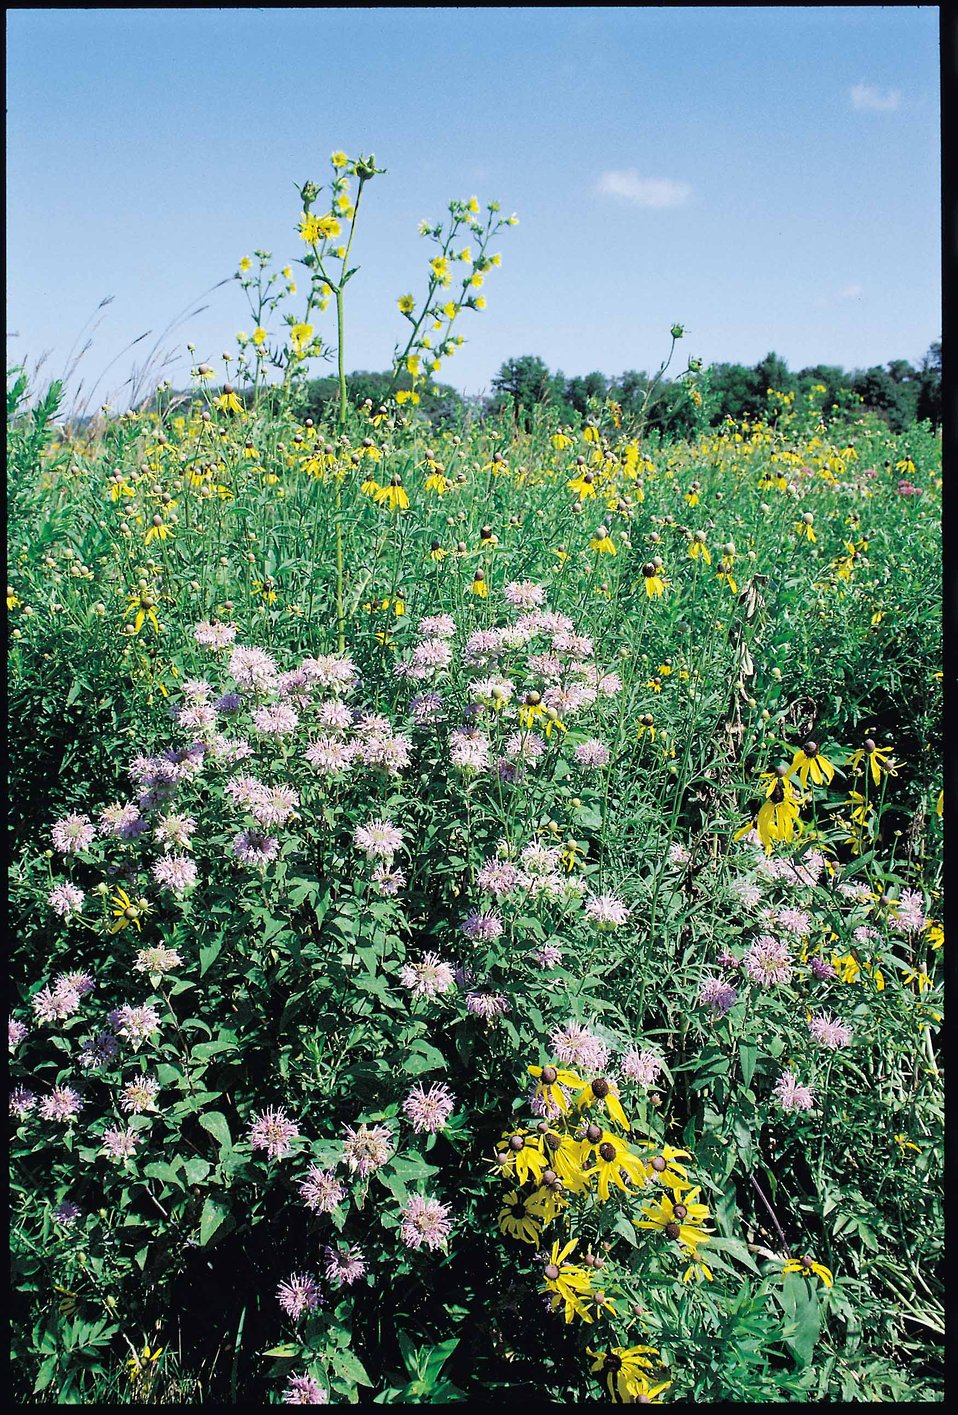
Native, warm season grasses and forbs appear in this new prairie planting in eastern Iowa.